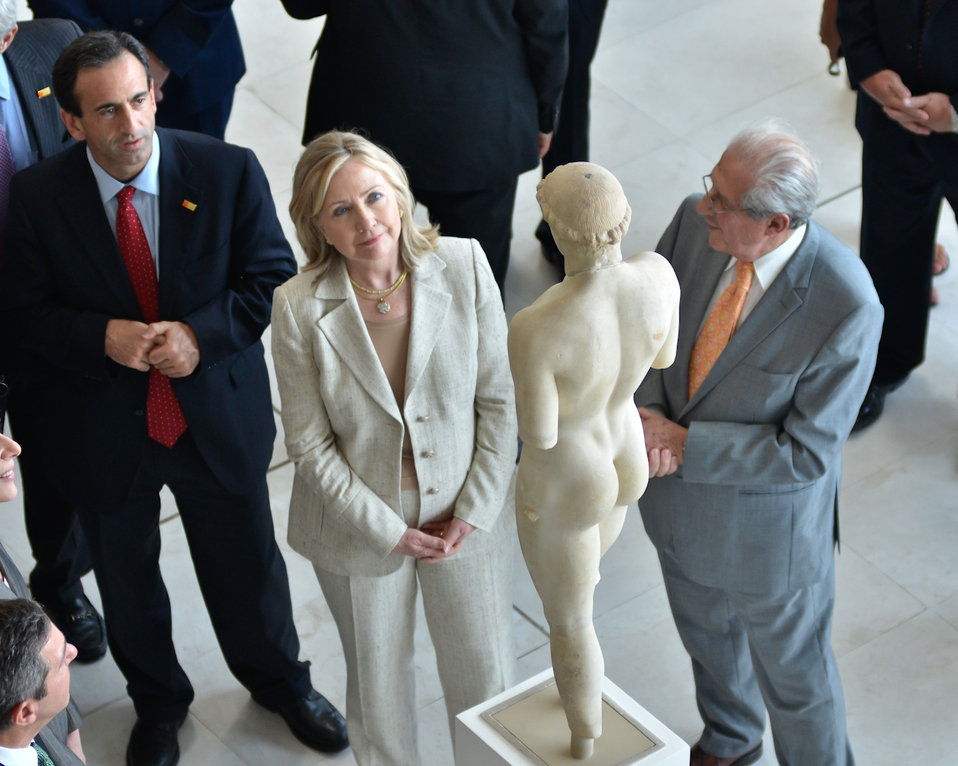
Secretary Clinton Looks at a Statue

U.S. Secretary of State Hillary Rodham Clinton looks at a statue alongside Dimitrios Pandermalis, right, President of the Museum Board of Directors, as she tours the Acropolis Museum in Athens, Greece, on July 17, 2011.